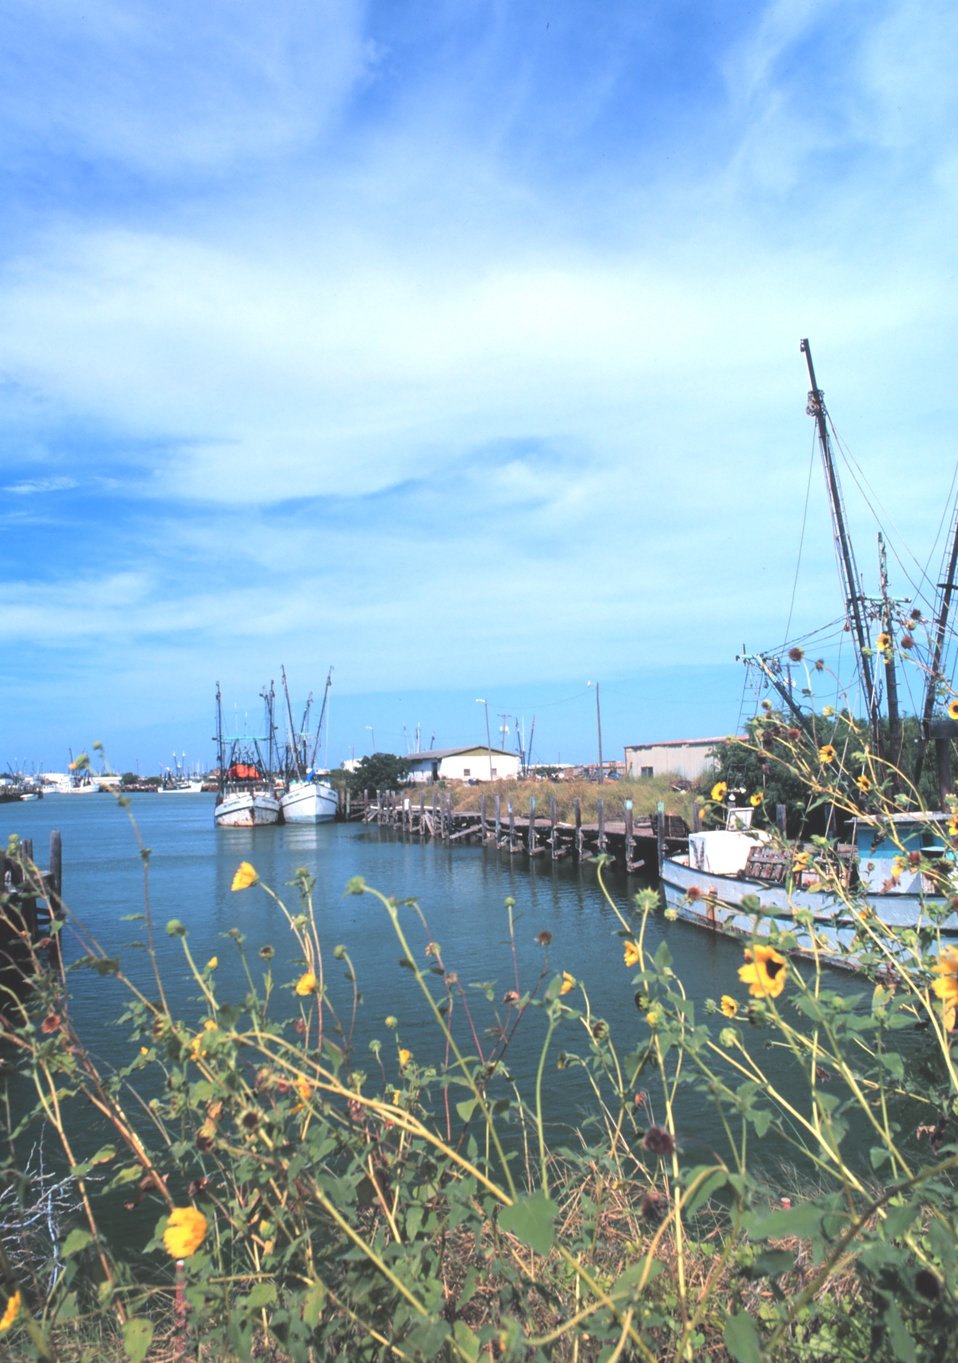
Shrimp boats and sunflowers